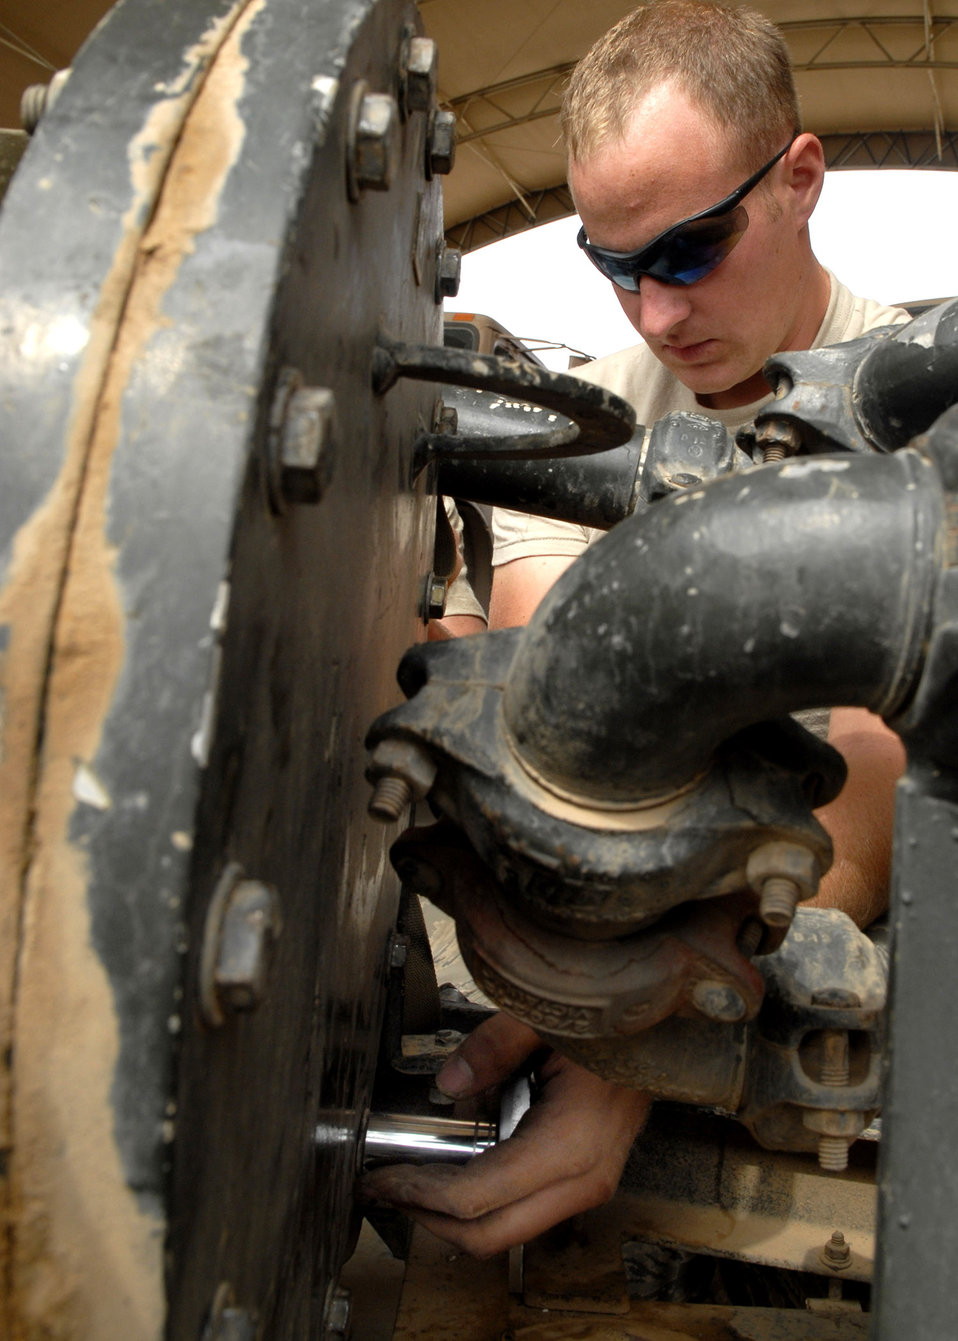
Fuel gauge

Senior Airman Justin Collins changes out the filter on a pumping unit Oct. 17 at Balad Air Base, Iraq. The pump is used to transfer fuel from storage cells to mobile refueling equipment. Airman Collins is assigned to the 332nd Expeditionary Logistics Readiness Squadron. He is deployed from Little Rock Air Force Base, Ark., where he is a member of the 314th Logistics Readiness Squadron.